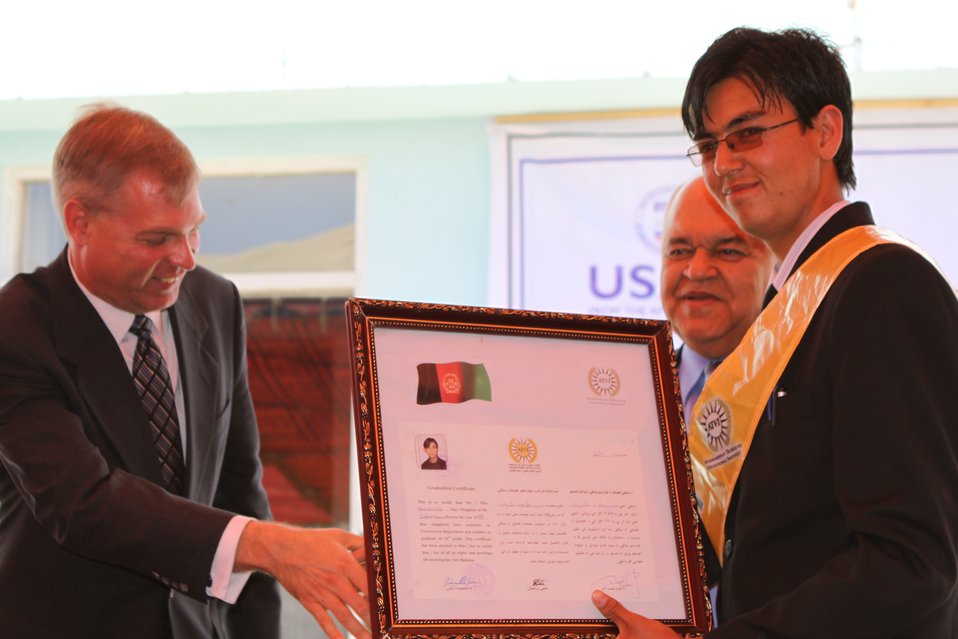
100522 ATVI Graduation 123